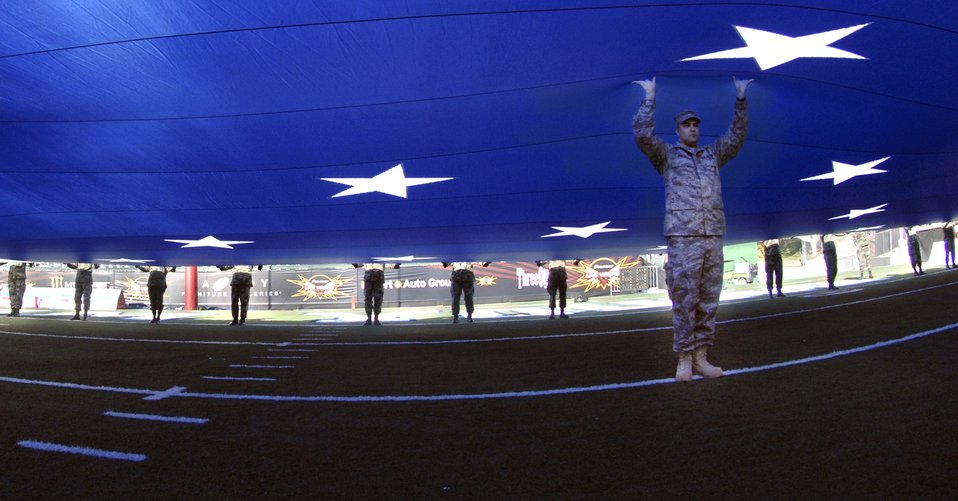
Supporting the flag

Airmen assigned to Nellis and Creech air force bases in Nevada, support a huge American flag Dec. 20 during the singing of the national anthem at the Pioneer Las Vegas Bowl at Sam Boyd Stadium in Las Vegas.